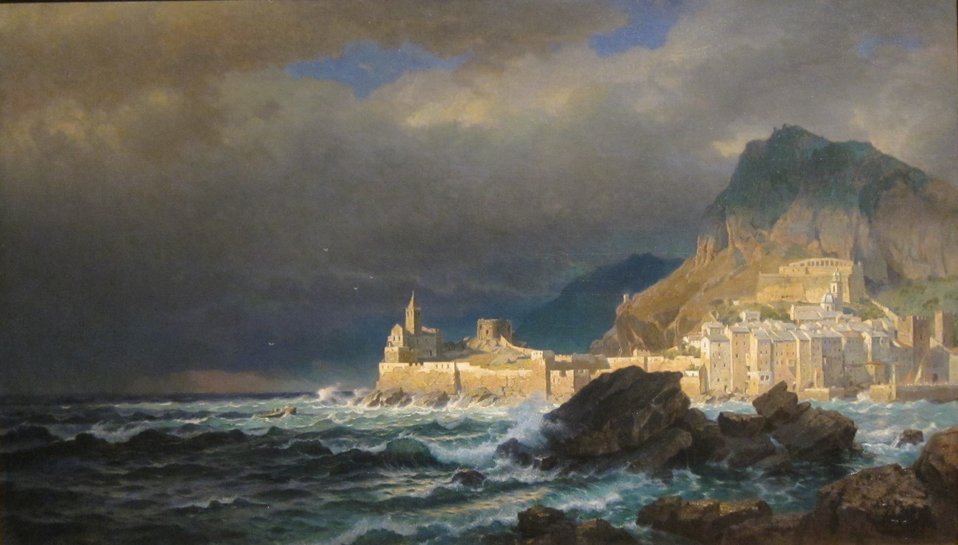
Porto Venere, Spezia, Italy, oil on canvas painting by William Stanley Haseltine, 1878, Dayton Art Institute